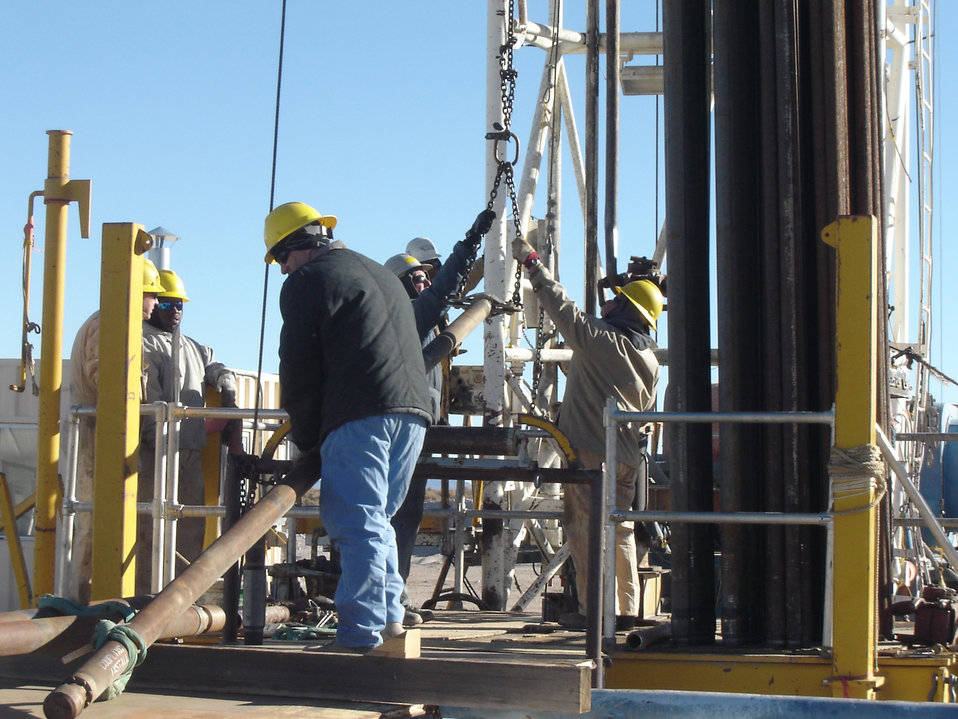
Recovery Act Accelerates Construction of Wells at NNSS

Workers built ER-20-8, the first of two Recovery Act-funded wells, in the fall of 2009.
The wells will help NNSS study groundwater contaminants.